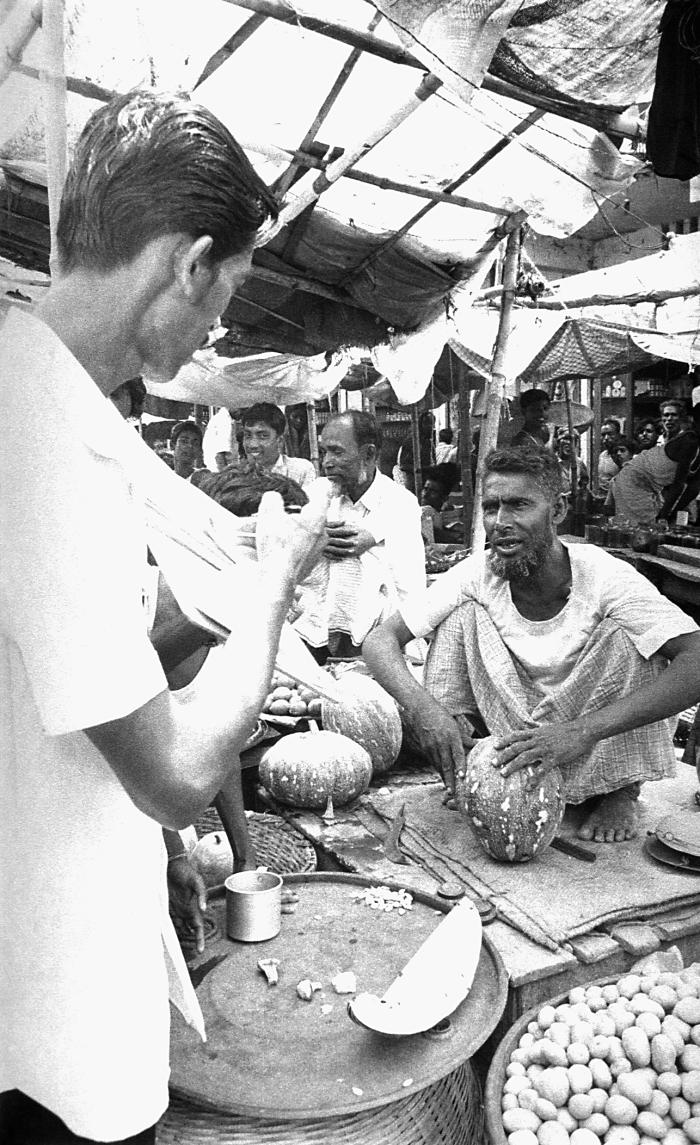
This 1975 photograph depicted a community smallpox eradication team volunteer as he was conducting a one-on-one discussion investigating whether or not this melon salesman had any knowledge of possible smallpox cases. Such a one-on-one interrogatory was much more productive and accurate than discussions conducted in a group setting. If, indeed, a case was reported, from no matter the source, it was investigated fully, and if confirmed as a smallpox case, a reward was paid to the informant, no matter the age, and it was subsequently entered into the 'Containment Book'. The Containment Book was a ledger, which recorded all of the names of anyone living in, or within one half of a mile from a smallpox case, and subsequently all those listed were vaccinated against smallpox. Those vaccinated were followed until a 'successful' vaccination was observed.